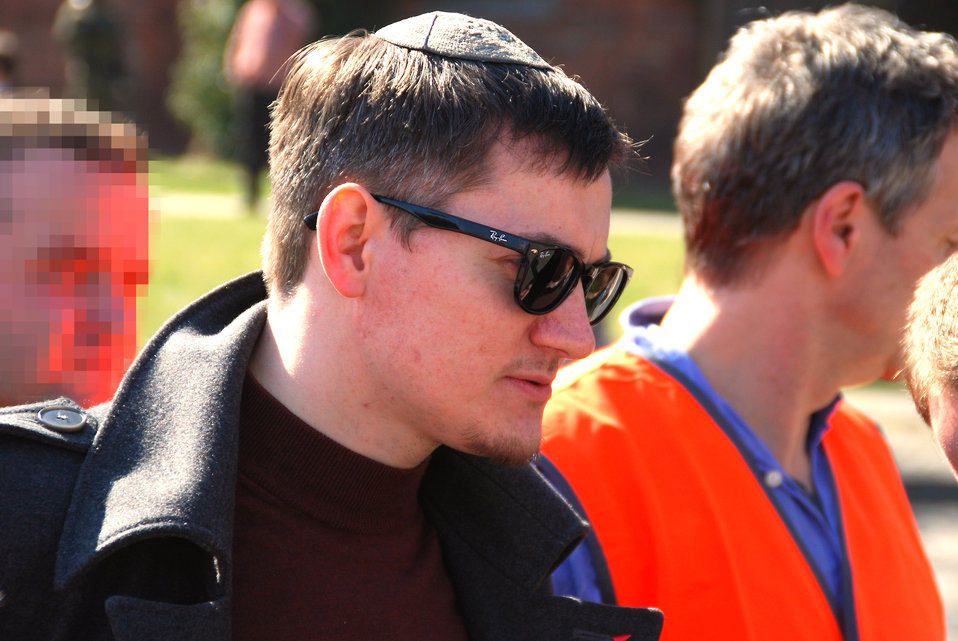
Proteste gegen den Nazi-Aufmarsch am 24.3.2012 in Frankfurt (Oder), mit Peer Jürgens, Mitglied des Landtages Brandenburg